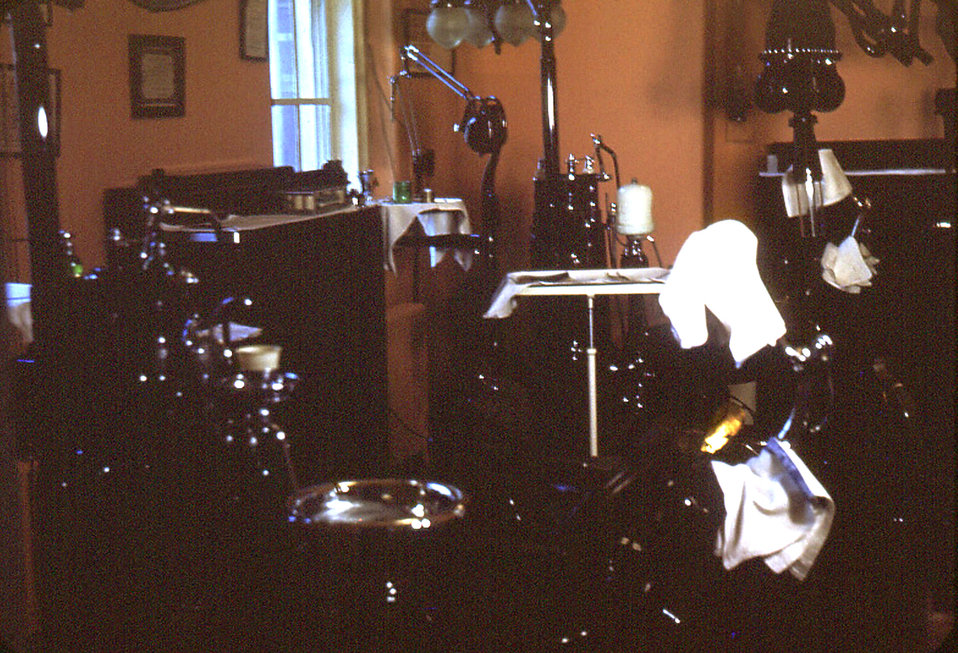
This historic image depicted the interior of the Carville, Louisiana Leprosarium's dental clinic, which was staffed by a single resident dentist who was kept busy six days a week. A single dentist was responsible for providing the dental care for the entire roster of patients. The hospital was a self-contained compound with its own storehouse, laundry, food-processing facilities, and patient treatment centers exemplified by this dental clinic."Patients of the U.S. Marine Hospital in Carville, Louisiana, produced a set of 35 mm slides around 1950 from which this image was derived. In 2002, a patient's son donated the set, the only one known in existence, to the museum. The father, a patient at Carville for several years, brought these slides home around 1950 to give his family a snapshot of life at the national leprosarium. The act of quarantining patients for leprosy (HD) remained law in the state of Louisiana until 1957."